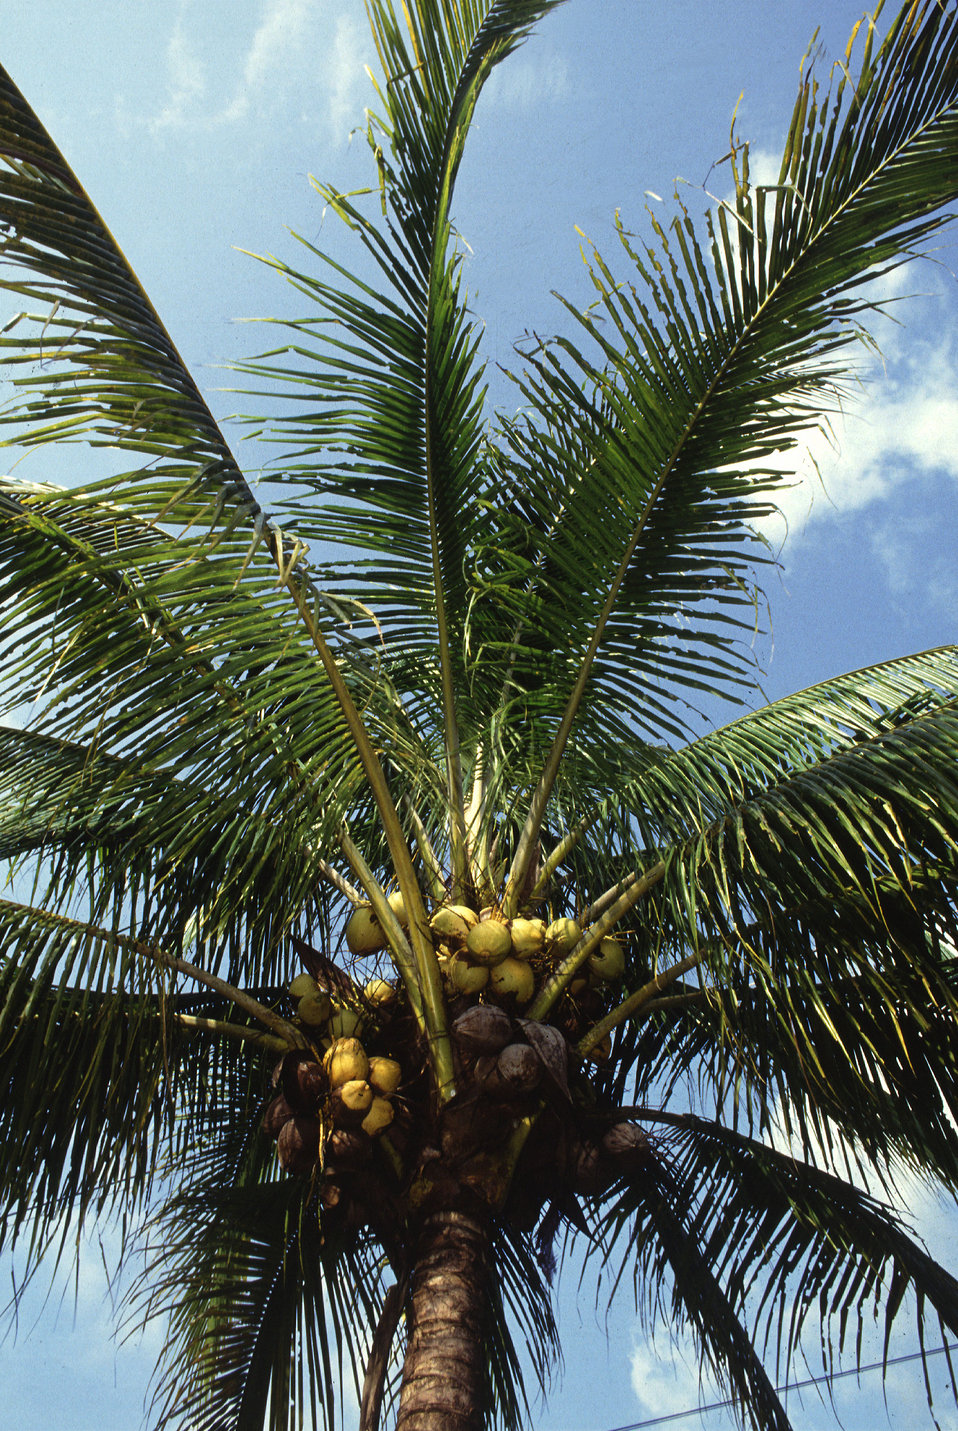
A Manila dwarf coconut palm grows on the grounds of the U.S. Department of Agriculture (USDA) Agricultural Research Service (ARS) Tropical Agriculture Research Station in Mayaguez, Puerto Rico.